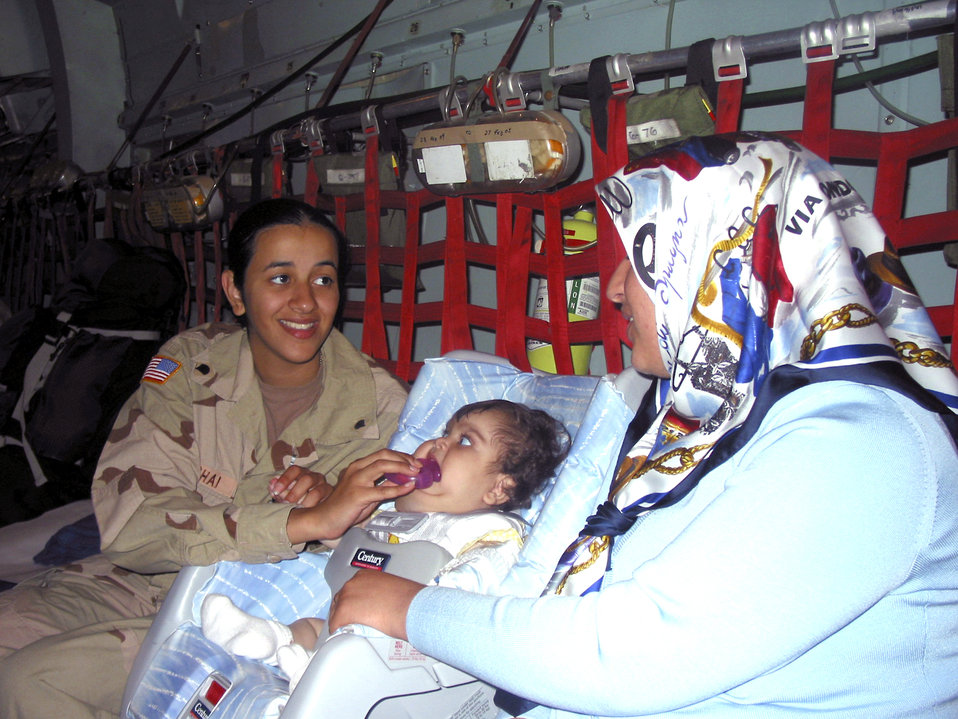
Airmen help bring Iraqi infant to America

RAMSTEIN AIR BASE, Germany -- Army Spc. Mariana Beshai cares for 8-month-old Fatemah Khalil Hassan while talking to her mother, Beyda'a Amir Abdul Jabar, here May 19. The Iraqi child was flown to the United States where she will undergo specialized treatment at Children's Hospital in Columbus, Ohio. Specialist Beshai is assigned to the Army National Guard's 230th Support Battalion stationed in Iraq.